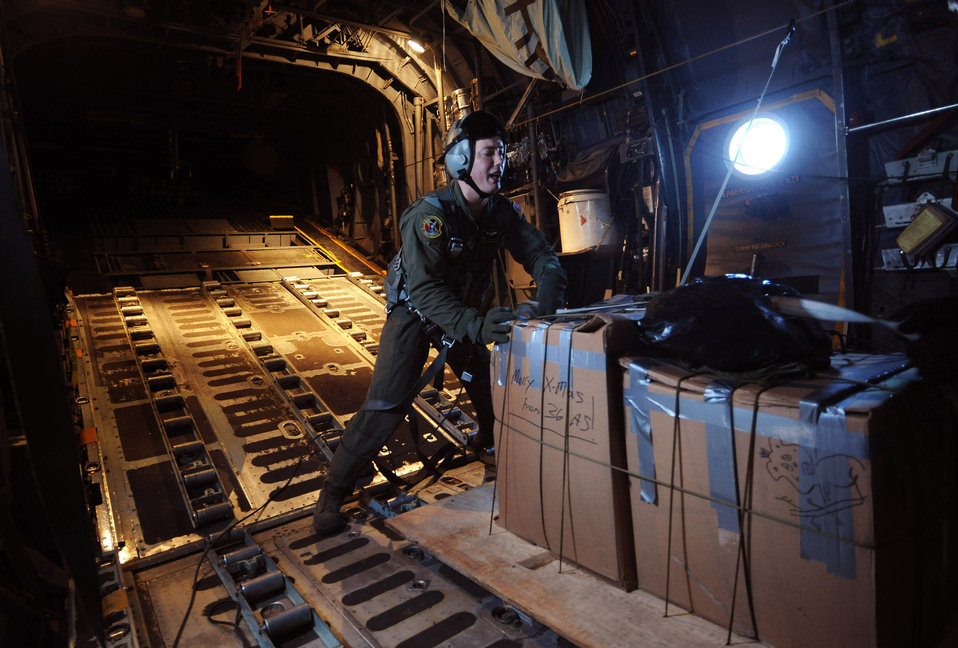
Prepping for Operation Christmas Drop

Tech. Sgt. Heath Bahyi loads boxes of donated goods into a C-130 Hercules at Yokota Air Base, Japan, Dec. 19 during Operation Christmas Drop. Airmen delivered more than 180 boxes of supplies to remote islands in the Pacific Ocean.